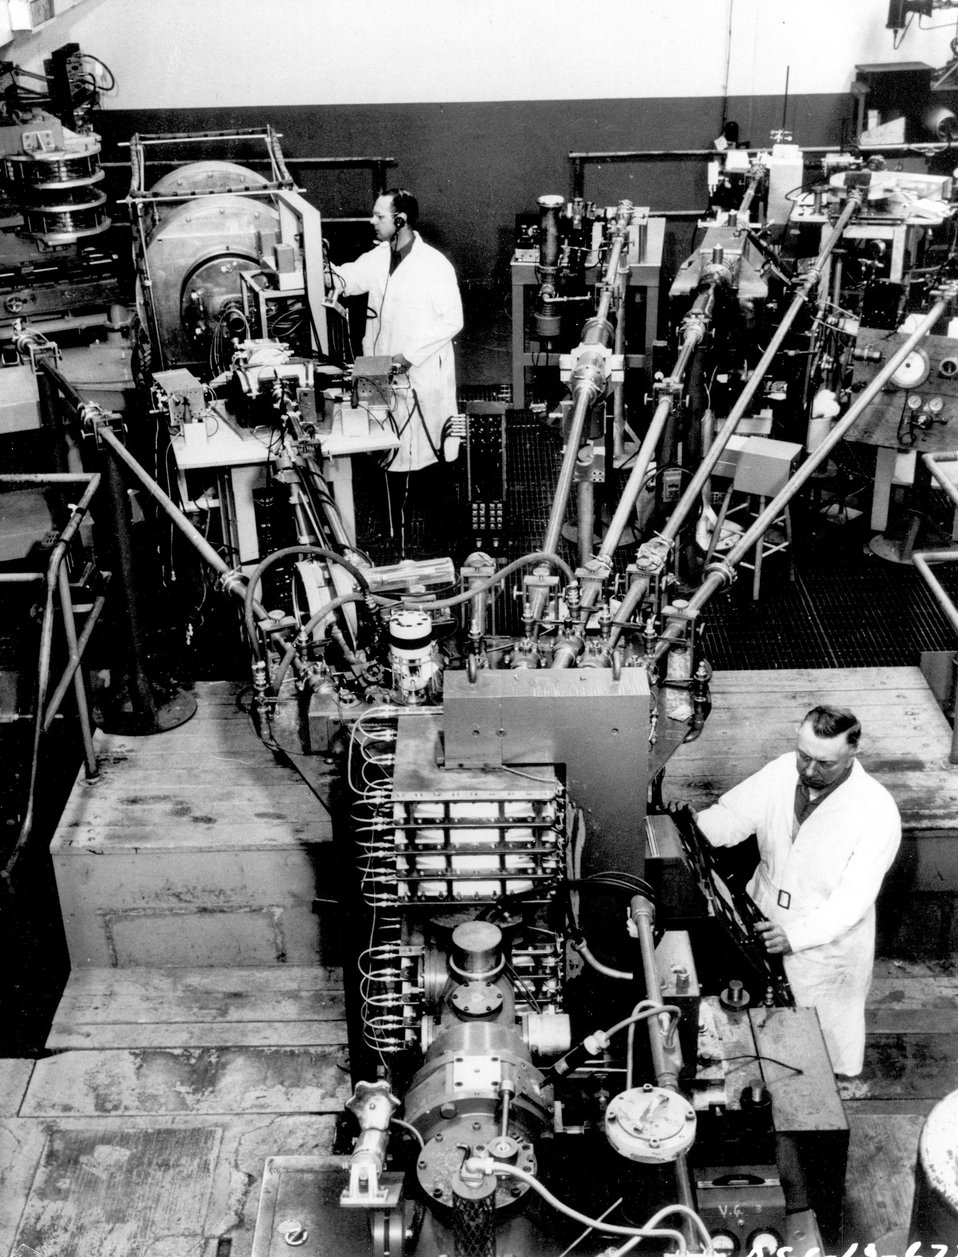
View from the high energy end of the Van de Graaff accelerator, which produces beams of protons, deutrons (heavy hydrogen nuclei), or alpha particles (helium nuclei) at up to 3 million-electron-volt energies. c. 1962